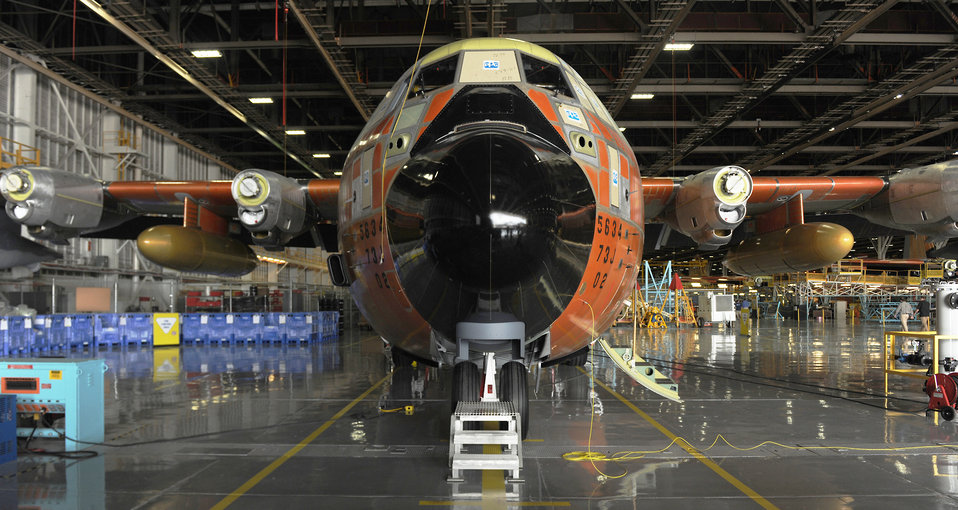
Air Force officials unveil rescue aircraft model

The second HC-130J Super Hercules to be manufactured sits in the final stage of production April 19, 2010, at the Lockheed Martin Aeronautics Company.